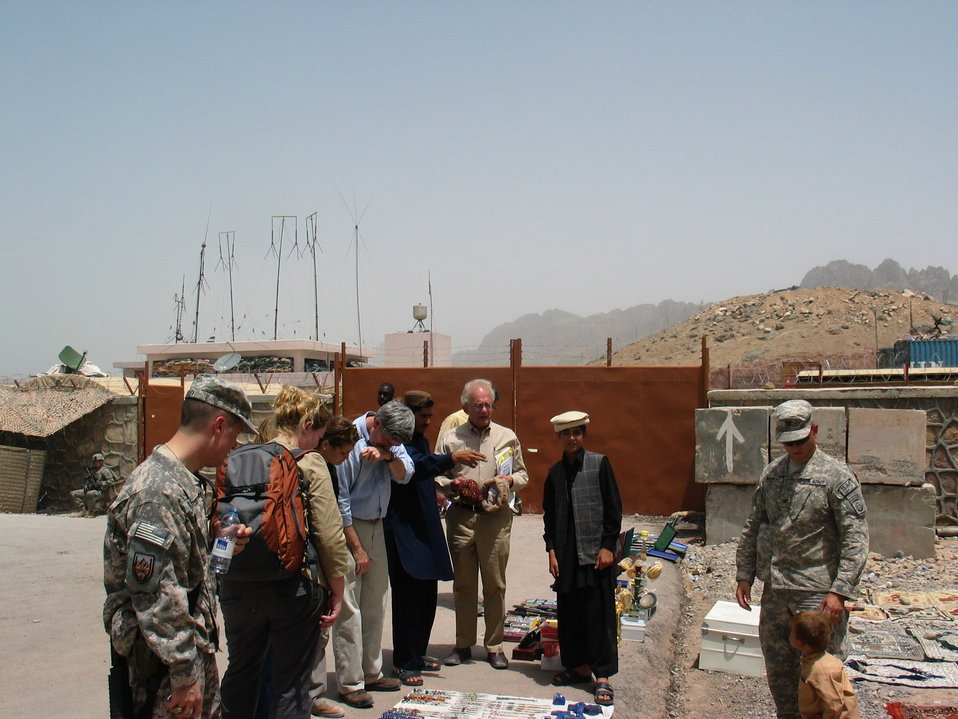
CODEL Berman